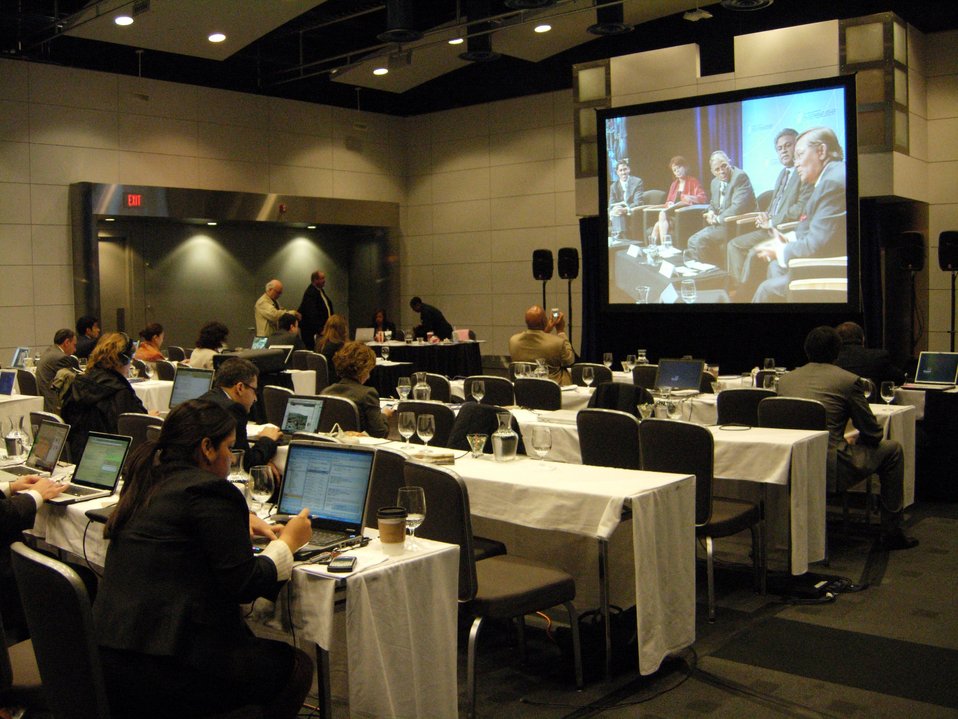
Foreign Press Center Corps Observes Nuclear Summit

The Foreign Press Center corps observes leaders at the Presidential Summit on Entrepreneurship, Washington, D.C., April 26, 2010.